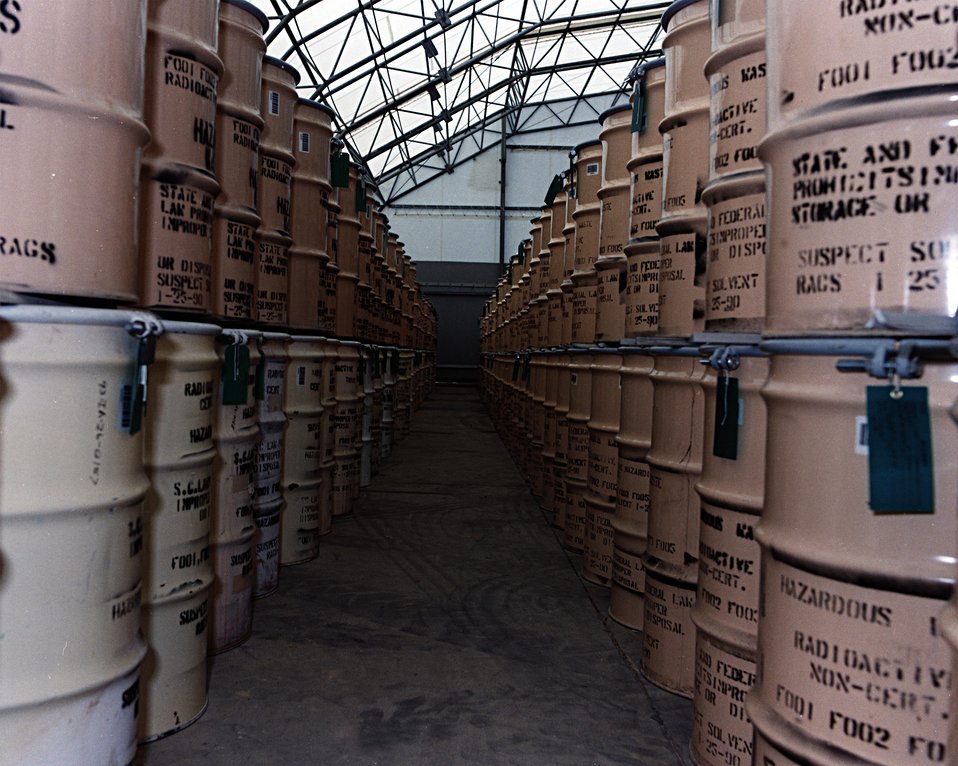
TRANSURANIC (TRU) DRUMS IN COVERED STORAGE DESTINED FOR WASTE ISOLATION PILOT PLANT, CARLSBAD, NM.